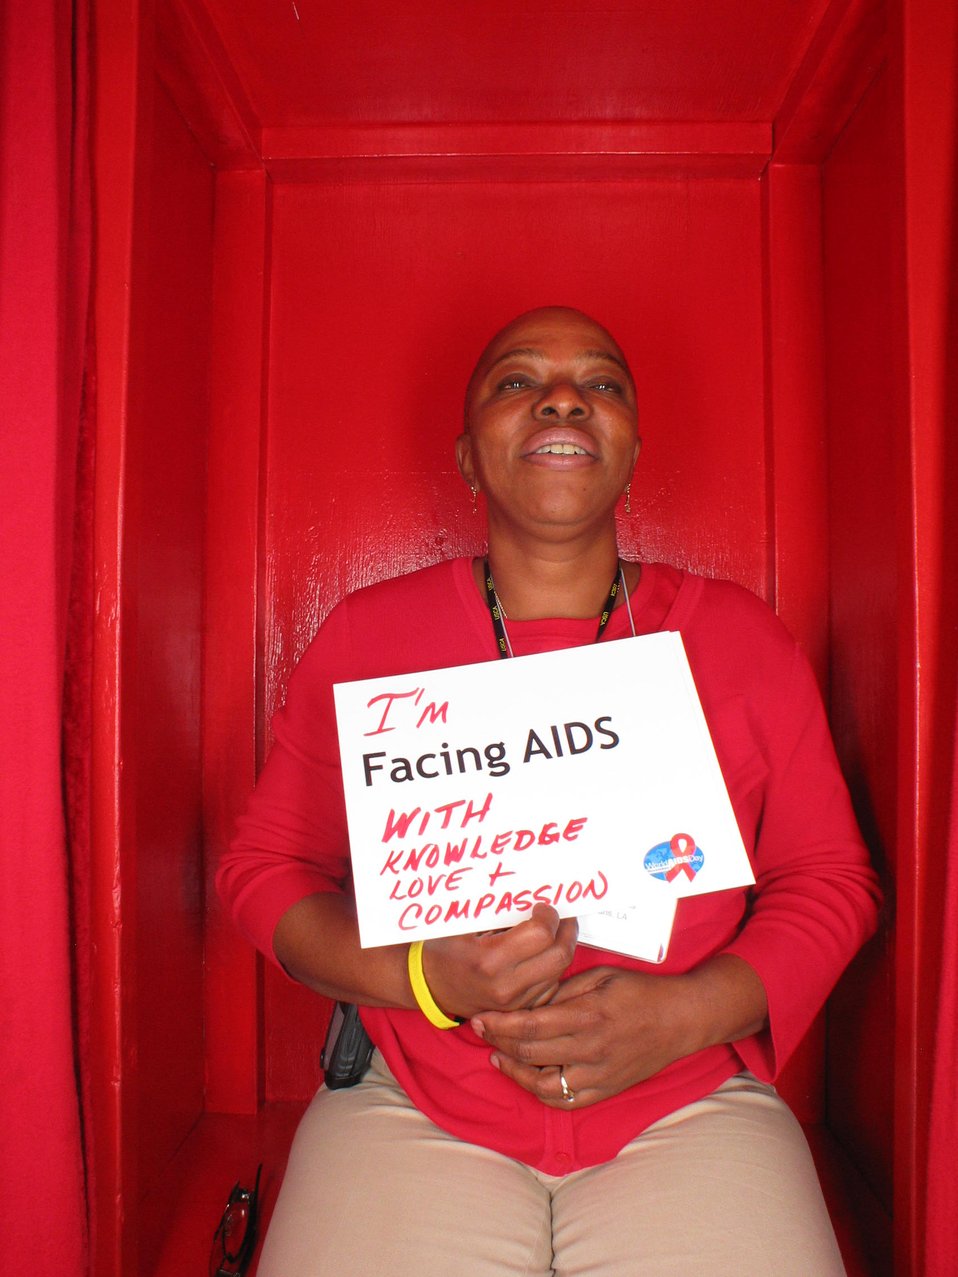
I'm Facing AIDS with knowledge, love and compassion.